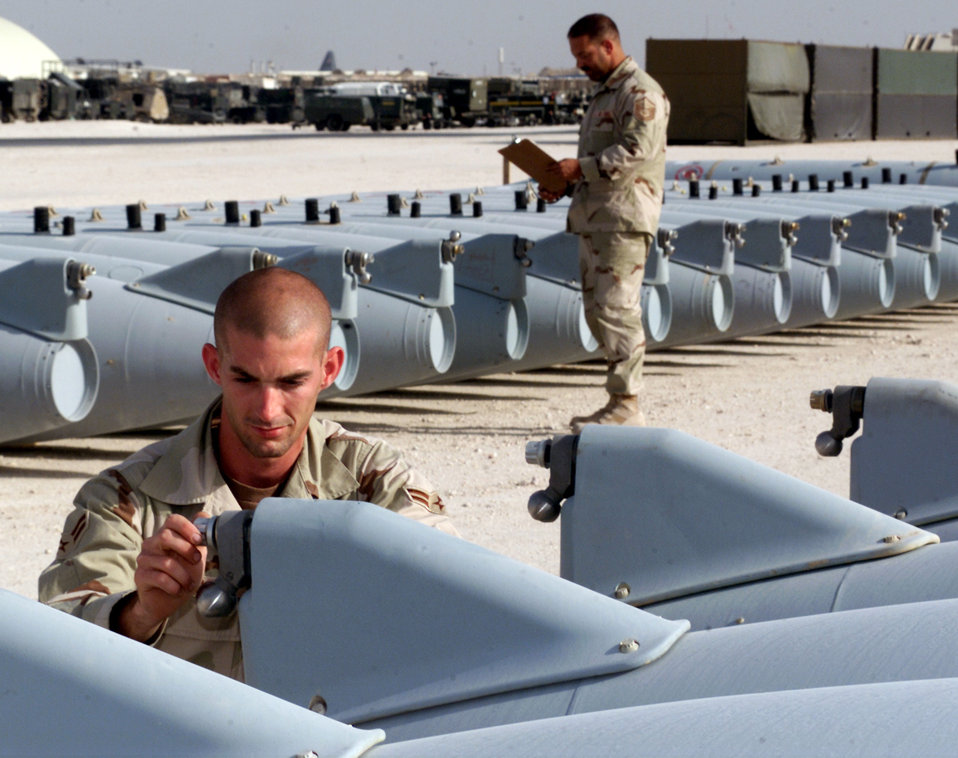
Hook

OPERATION ENDURING FREEDOM -- Airman 1st Class Jason Hook, an aircraft fuel systems journeyman, performs a daily inspection on an aircraft fuel tank at a forward-deployed location supporting Operation Enduring Freedom. Hook is assigned to the 379th Expeditionary Maintenance Squadron.